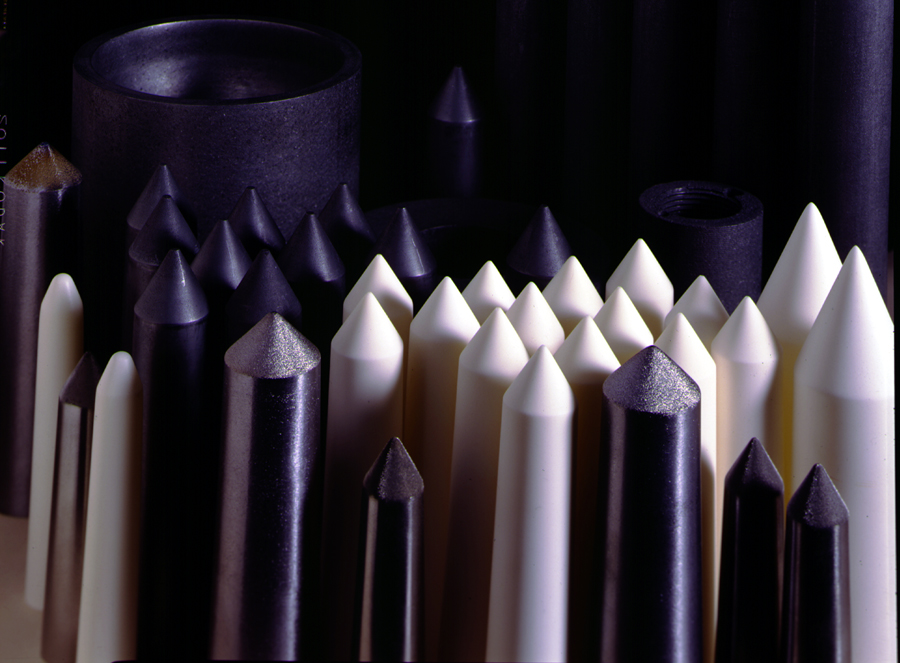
Crystal crucibles.

High-quality crystals are essential to worldwide efforts to determine the properties of materials. Ames Laboratory researchers produce such crystals in special crucibles like these which have been turned upside down to show their pointed bottoms. This design limits the number of possible site where a crystal can begin to grow.